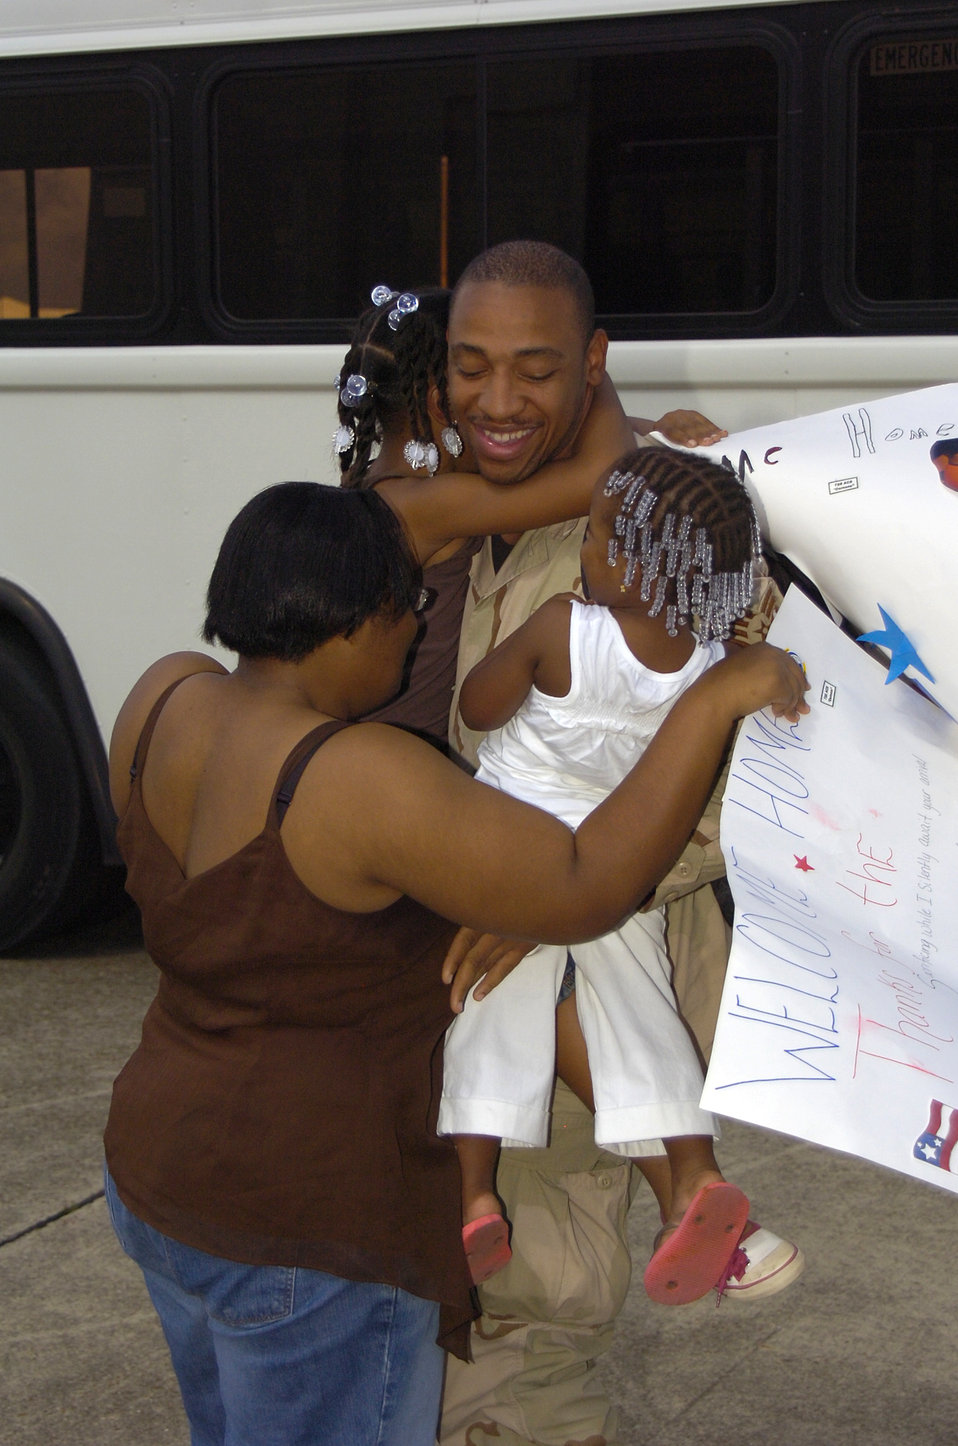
Airmen return home

An Airman from the 728th Air Control Squadron holds his wife and daughters after returning home Sept. 23 from a deployment to Iraq. The 728th ACS controlled the skies over Iraq supporting Operation Iraqi Freedom.